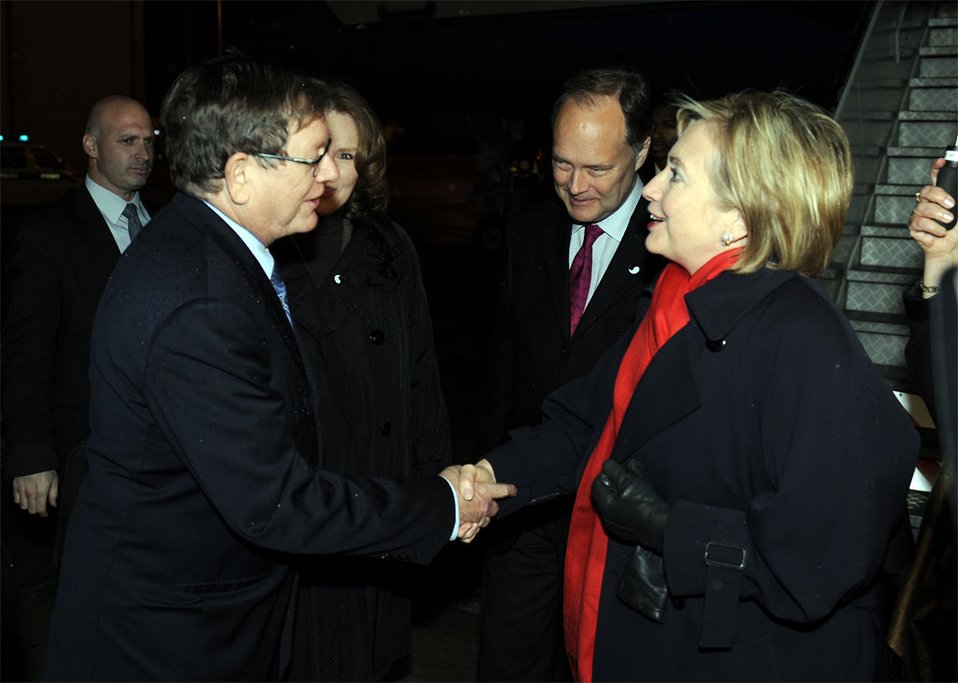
Secretary Clinton Arrives in Jerusalem

U.S. Secretary of State Hillary Rodham Clinton being greeted by U.S. Ambassador to Israel James B. Cunningham at Ben Gurion Airport, Israel March 2, 2009.